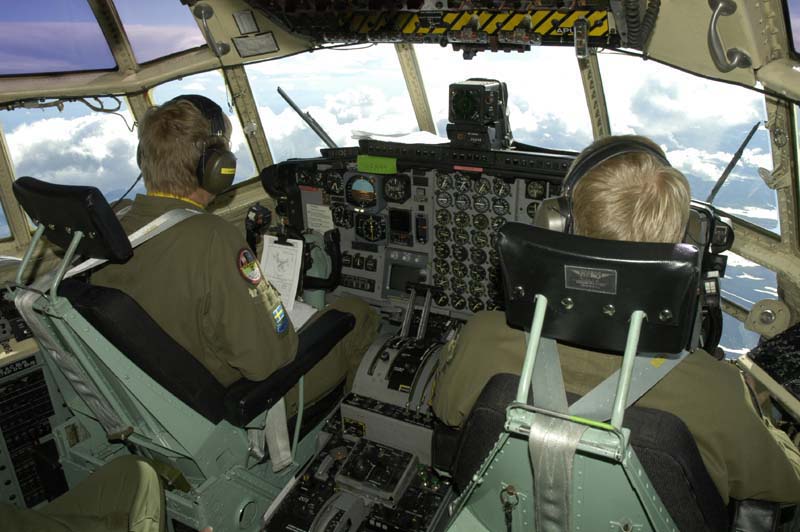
Transformation redefines multi-national exercise

A Swedish aircrew flies a C-130 Hercules to Eielson Air Force Base, Alaska, July 14, to participate Cooperative Cope Thunder, a multi-national exercise that continues through Aug. 5.